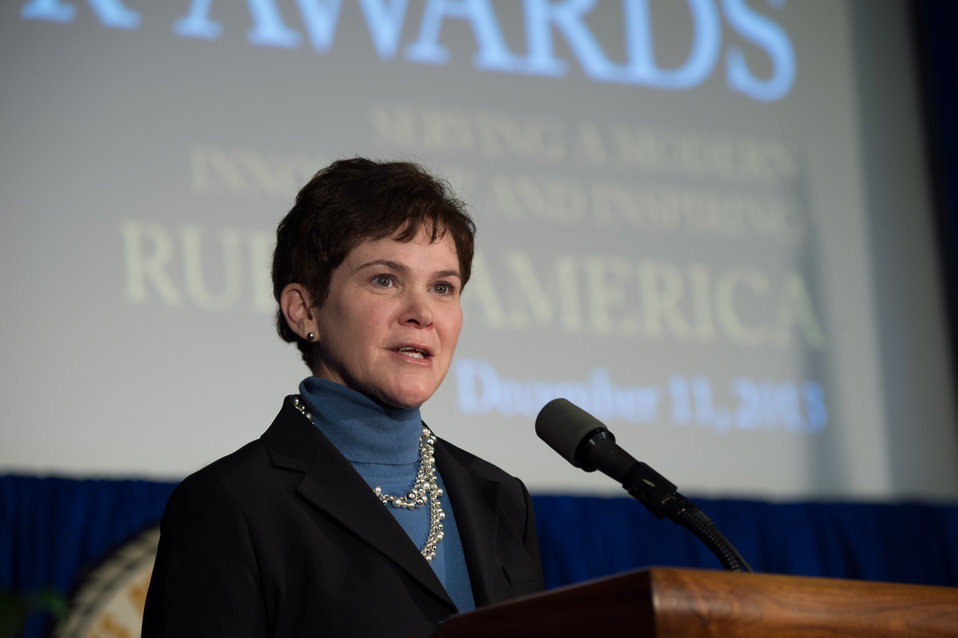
Agriculture Deputy Secretary Krysta Harden speaks at the 65th Annual Secretary’s Honor Awards “Serving A Modern Innovative and Inspiring Rural America” in the Jefferson Auditorium at the U.S. Department of Agriculture (USDA) in Washington, D.C. on Wednesday, Dec. 11, 2013.